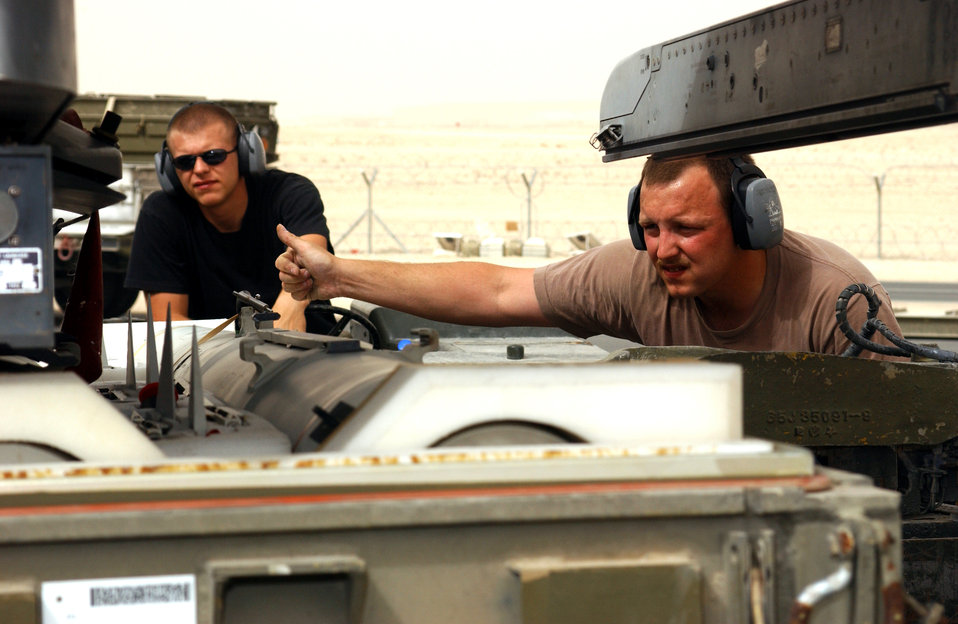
Driving directions

OPERATION IRAQI FREEDOM -- Airman 1st Class Michael Gucciardi drives the jammer while Staff Sgt. David Ross gives hand signals indicating which direction to move the missile while loading on a F-16CJ at a forward deployed location in Southwest Asia.